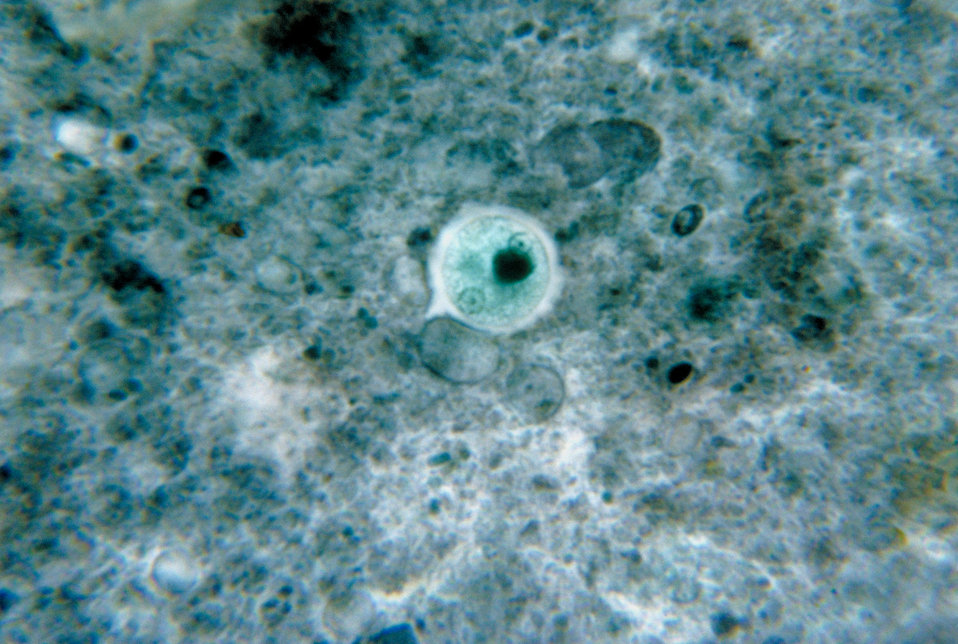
This micrograph stained with chlorazol black, revealed an Entamoeba histolytica cyst.